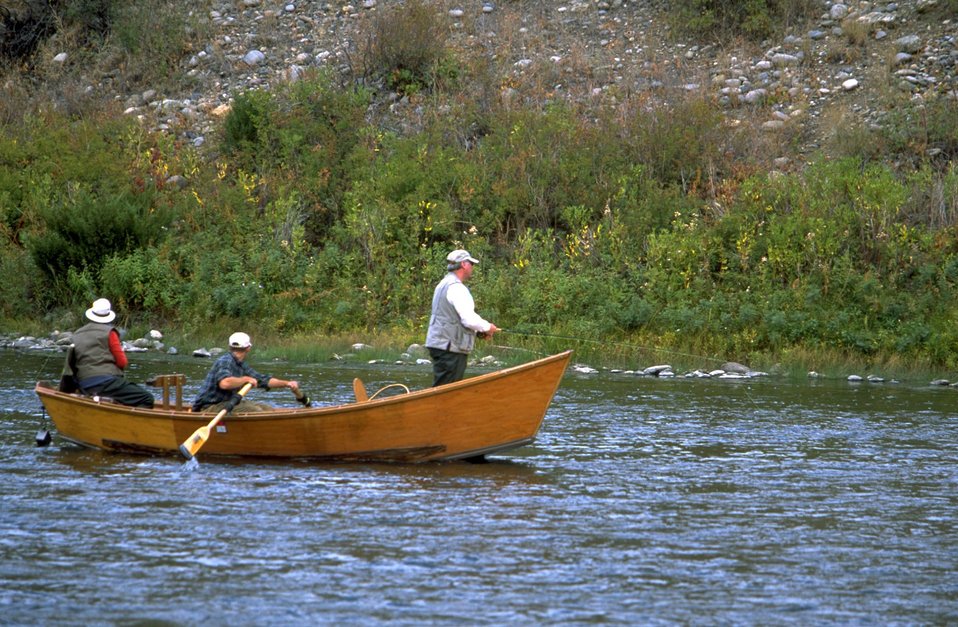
Float Fishing on the Madison River